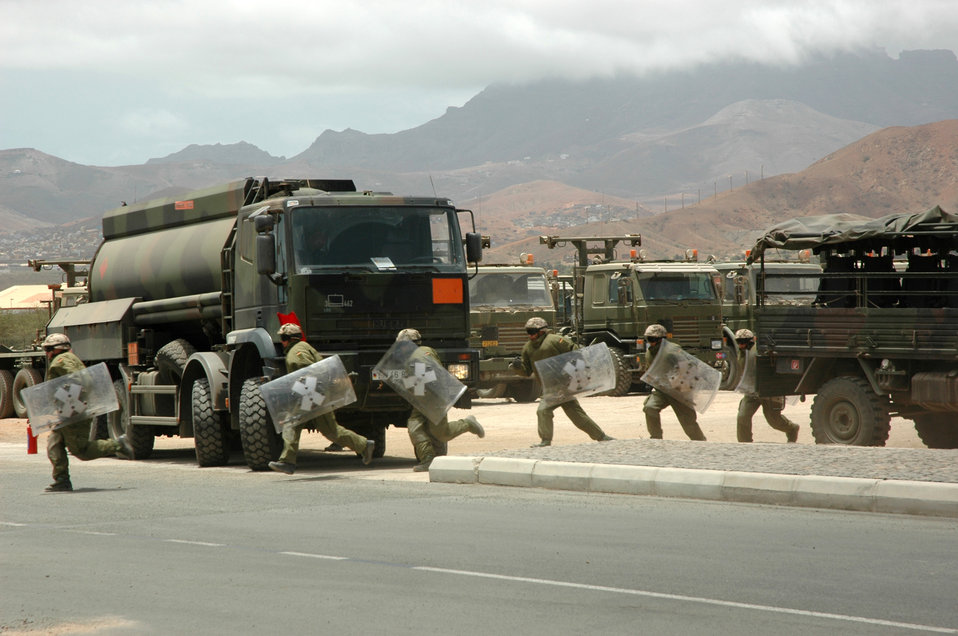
NATO troops exercise at Steadfast Jaguar

A German force protection platoon prepares to fend off simulated rioters during NATO's Exercise Steadfast Jaguar in Sao Vicente, Cape Verde, on Friday, June 23. The purpose of the exercise is to test NATO's ability to project a force a strategic distance from mainland Europe and sustain it. The riot scenario demonstrated the German platoon's crowd control and riot training.